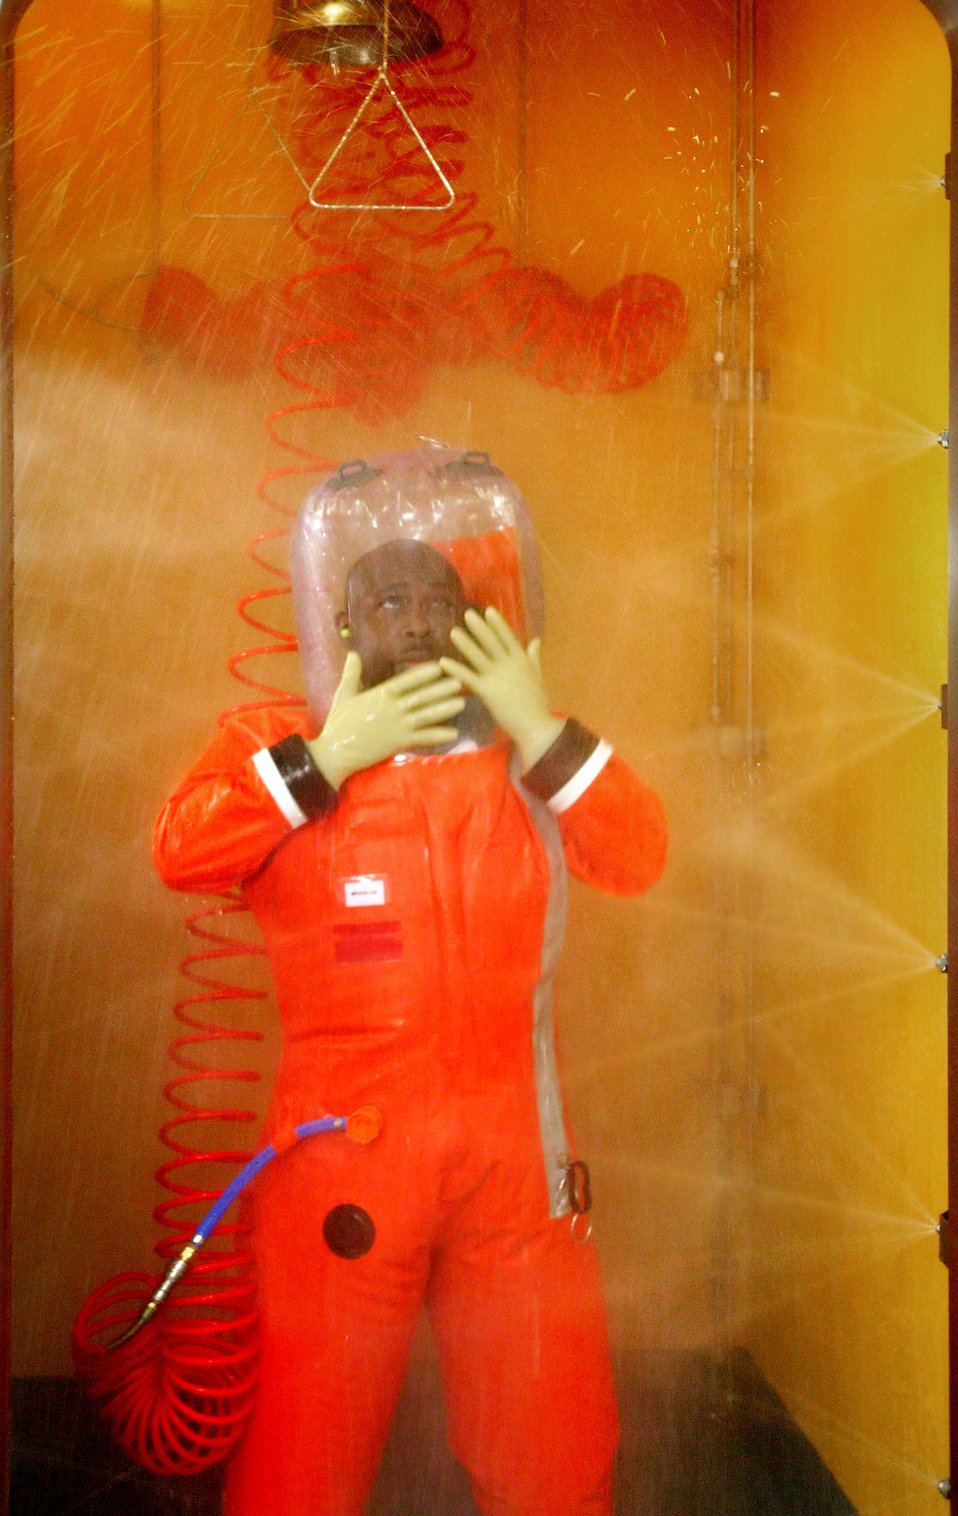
In this 2007 image, a Centers for Disease Control microbiologist was showering inside a Biosafety Level 4 (BSL-4) laboratory decontamination booth, prior to exiting the sealed confines of the BSL-4 lab. The process consists of a 4 minute, 5% Microchem wash, which is followed by a 3 minute rinse with water. See PHIL 10722 for another view of this activity.